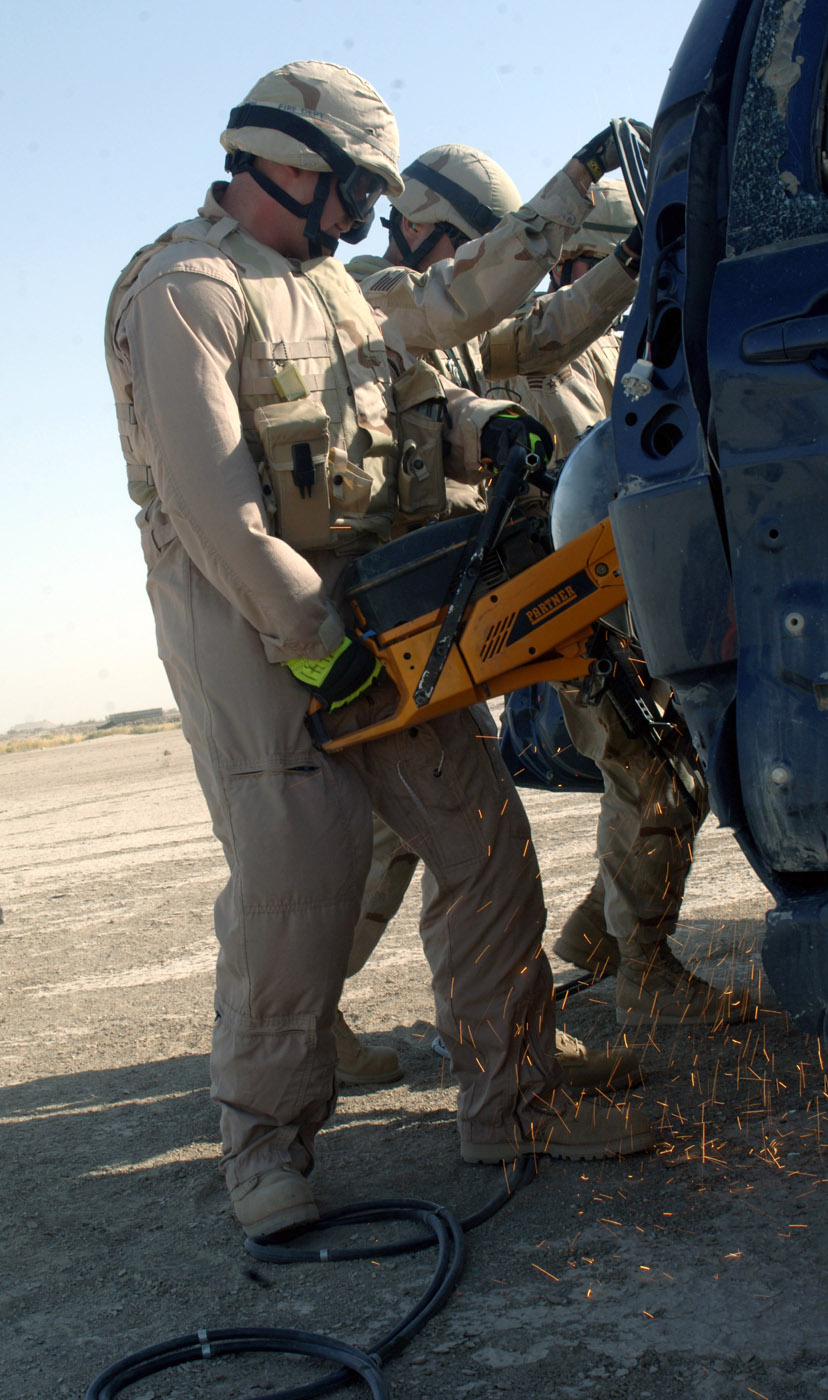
RAM squad exercises abilities

(From left) Staff Sgt. Patrick Peterson, Tech. Sgt. Jeremy Kennedy and Senior Airman Adam Little cut into a vehicle frame to open the door and remove a simulated crash victim at Ali Base, Iraq. The scenario was part of their training for the Rescue Air Mobility Squad.